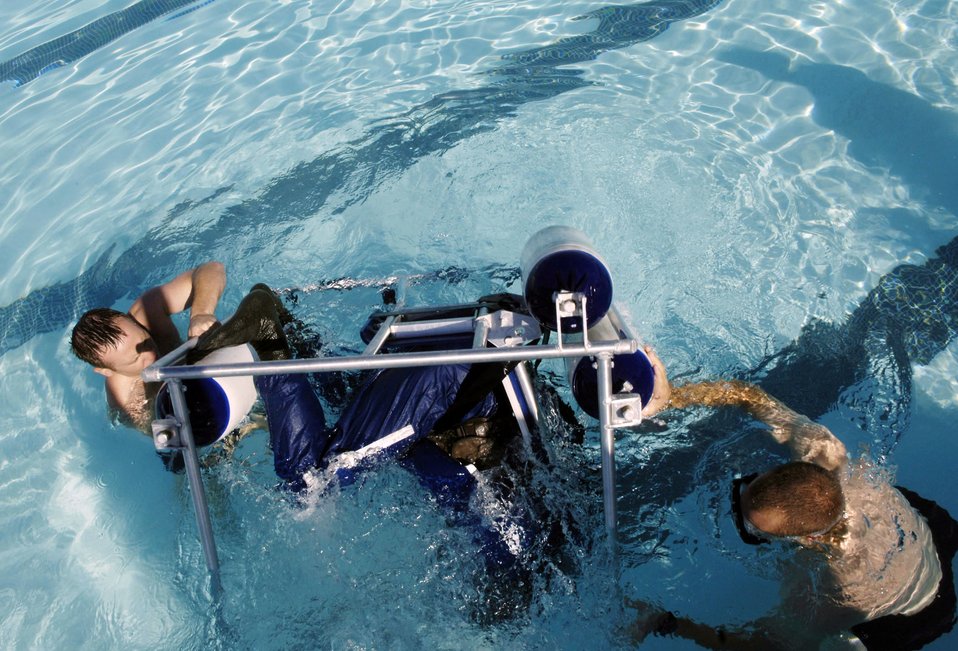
Practicing to be safe in the water

Staff Sgt. Michael Nettleingham (left) and Staff Sgt. Chris Jones train Army Chief Warrant Officer James Mininger on helicopter escape procedures in the event of a water landing. The sergeants are survival, evasion, resistance and escape, or SERE, instructors at Nellis Air Force Base, Nev. The Army National Guardsmen, an OH-58 Scout pilot, was taking his annual water survival training.